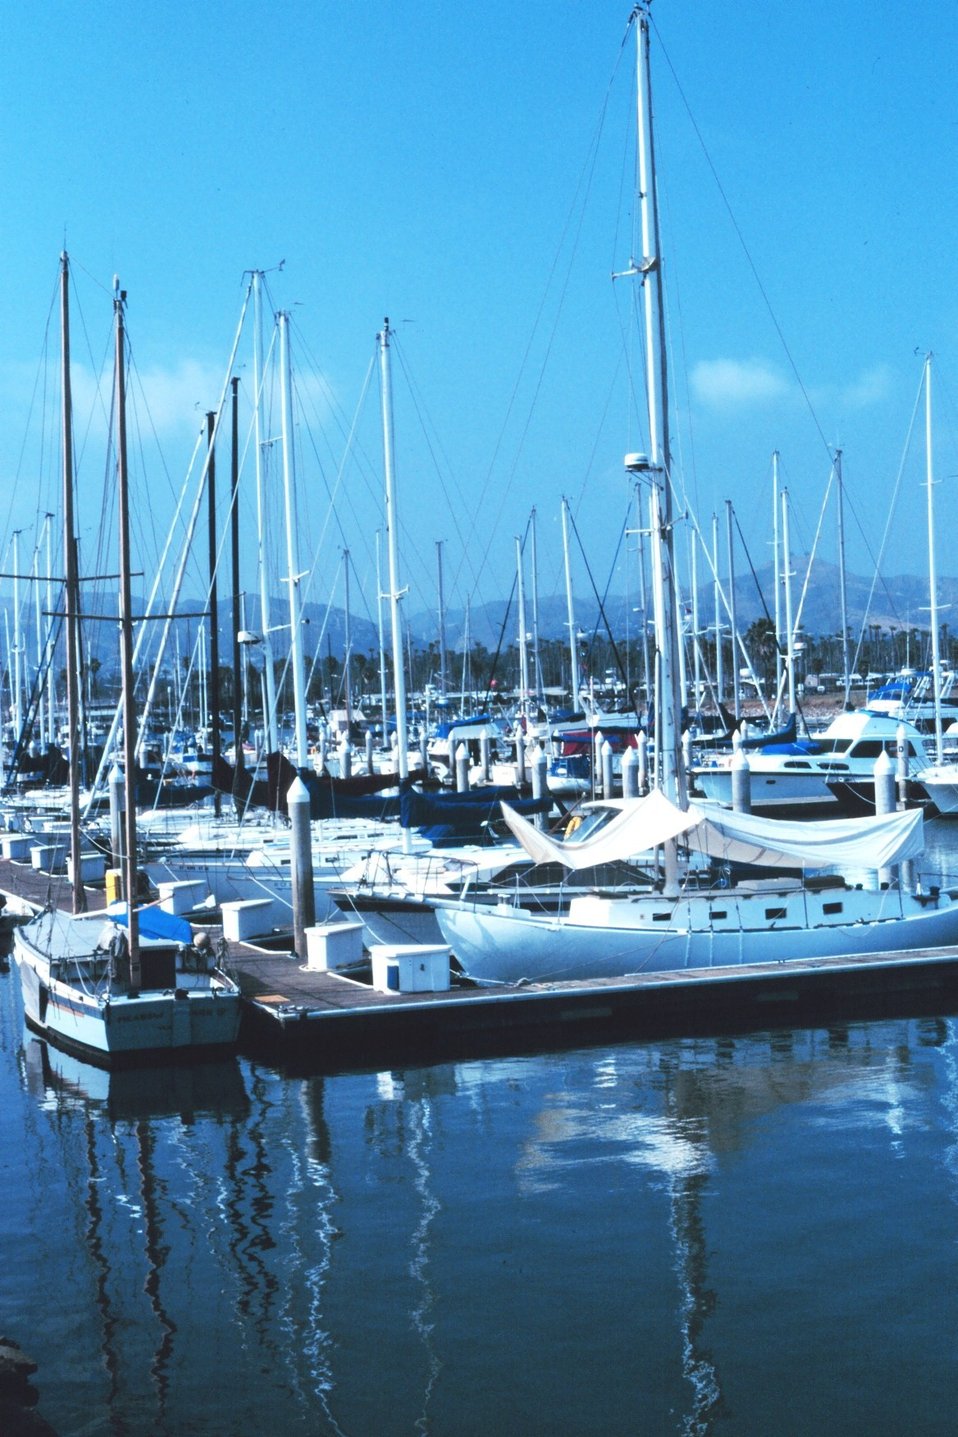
The yacht harbor at Ventura.